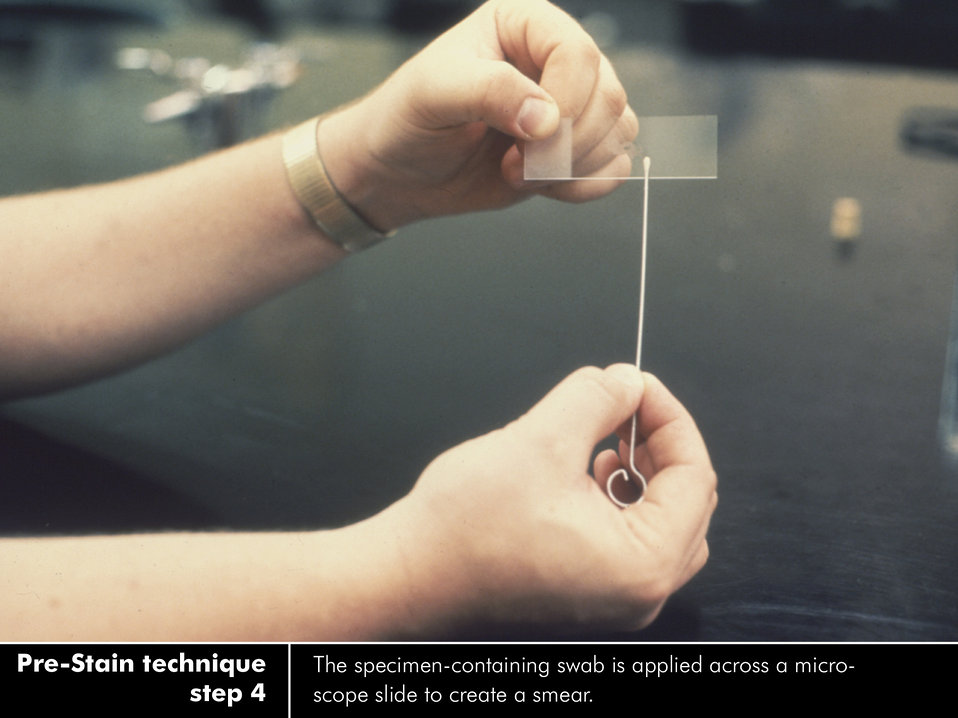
Pre-stain technique - Step 4 of 5. See PHIL ID#'s: 3431, 3572, 3432, 3565, 3428 for the complete set.